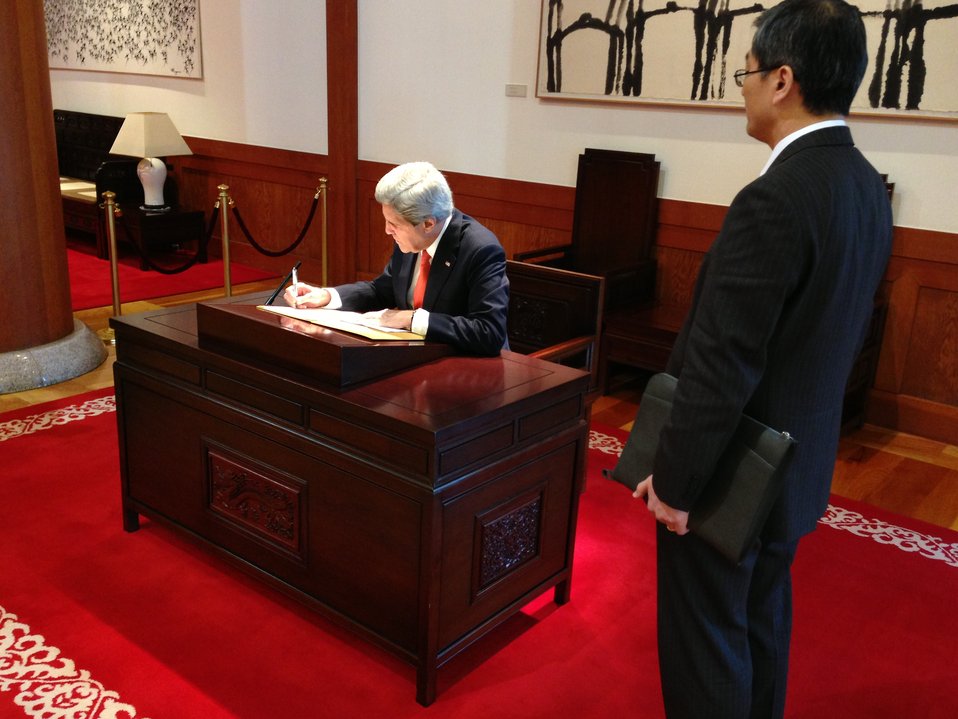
Secretary Kerry Signs Guest Book

U.S. Secretary of State John Kerry signs a guest book upon his arrival at The Blue House, the office and residence of South Korean President Park Geun-hye, in Seoul, South Korea, on April 12, 2013.